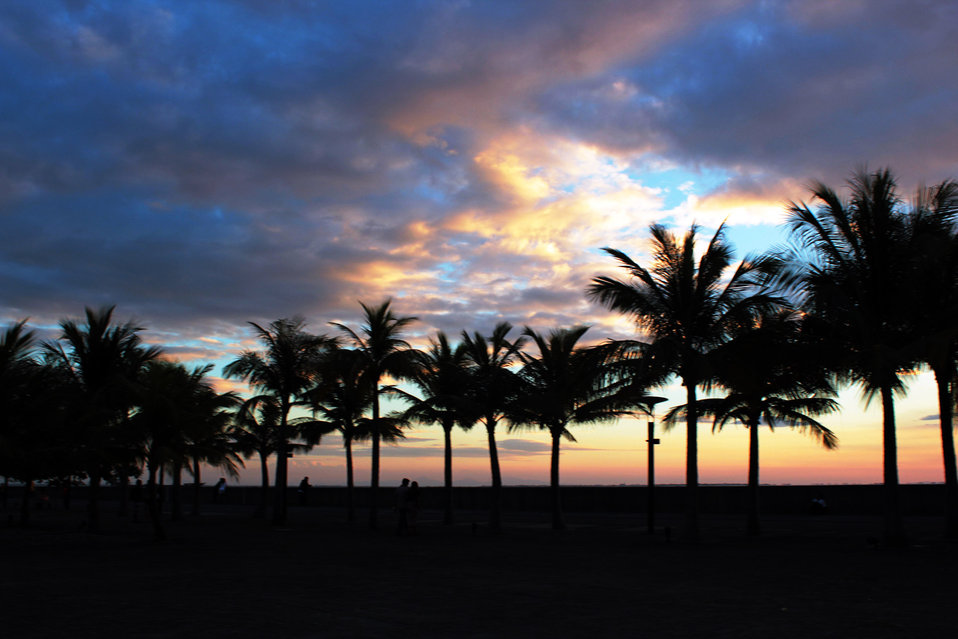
Sunset in the park.